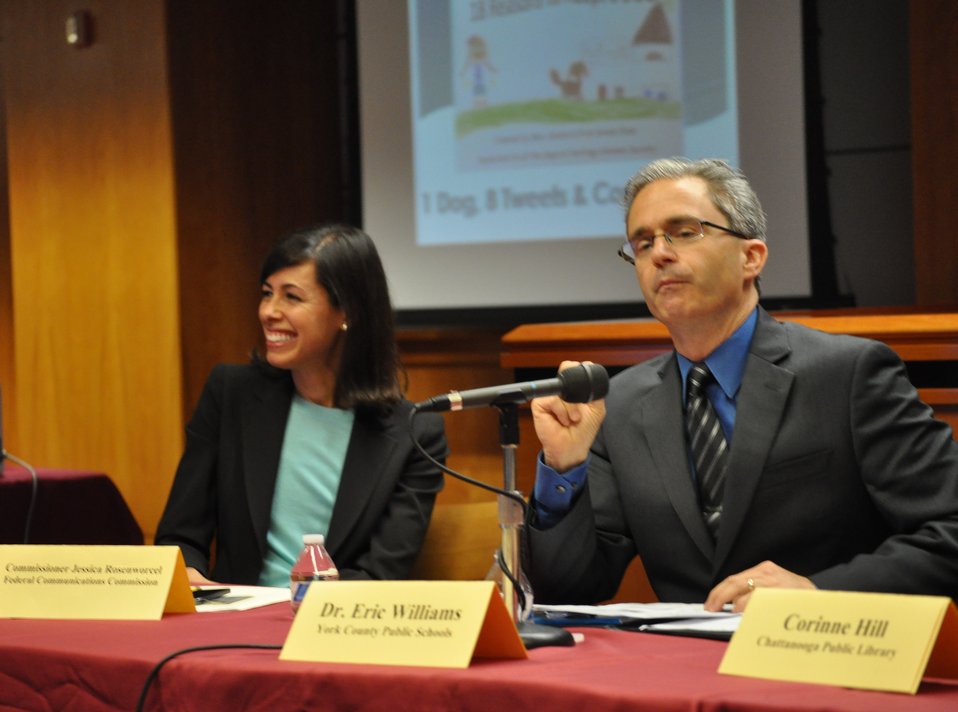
5.6.2014 E-Rate Modernization Workshop

Panel Discussion: Expanding Access to Wi-Fi for Schools and Libraries